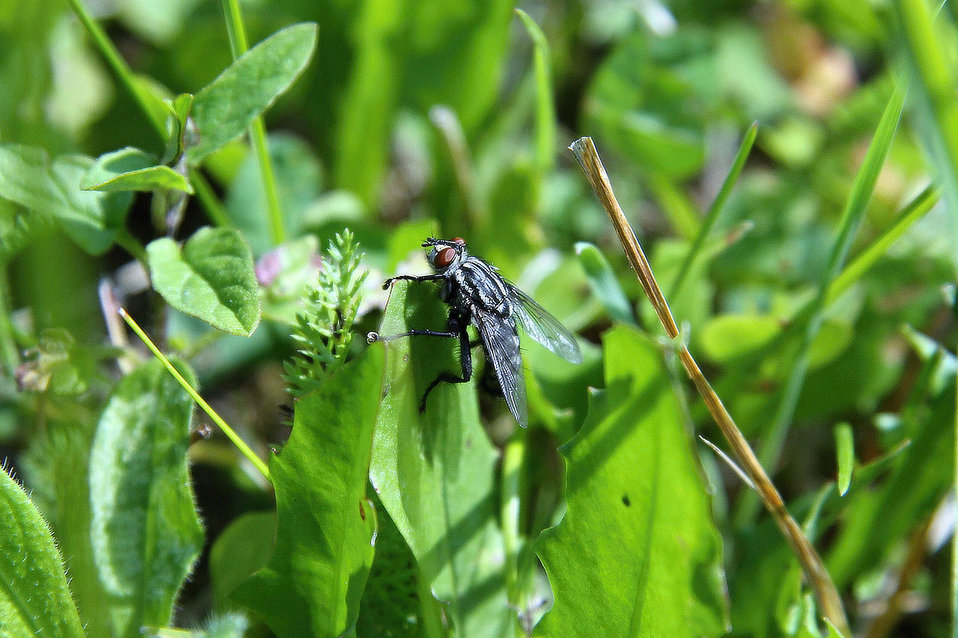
Fly in grass

Fly, grass, model.